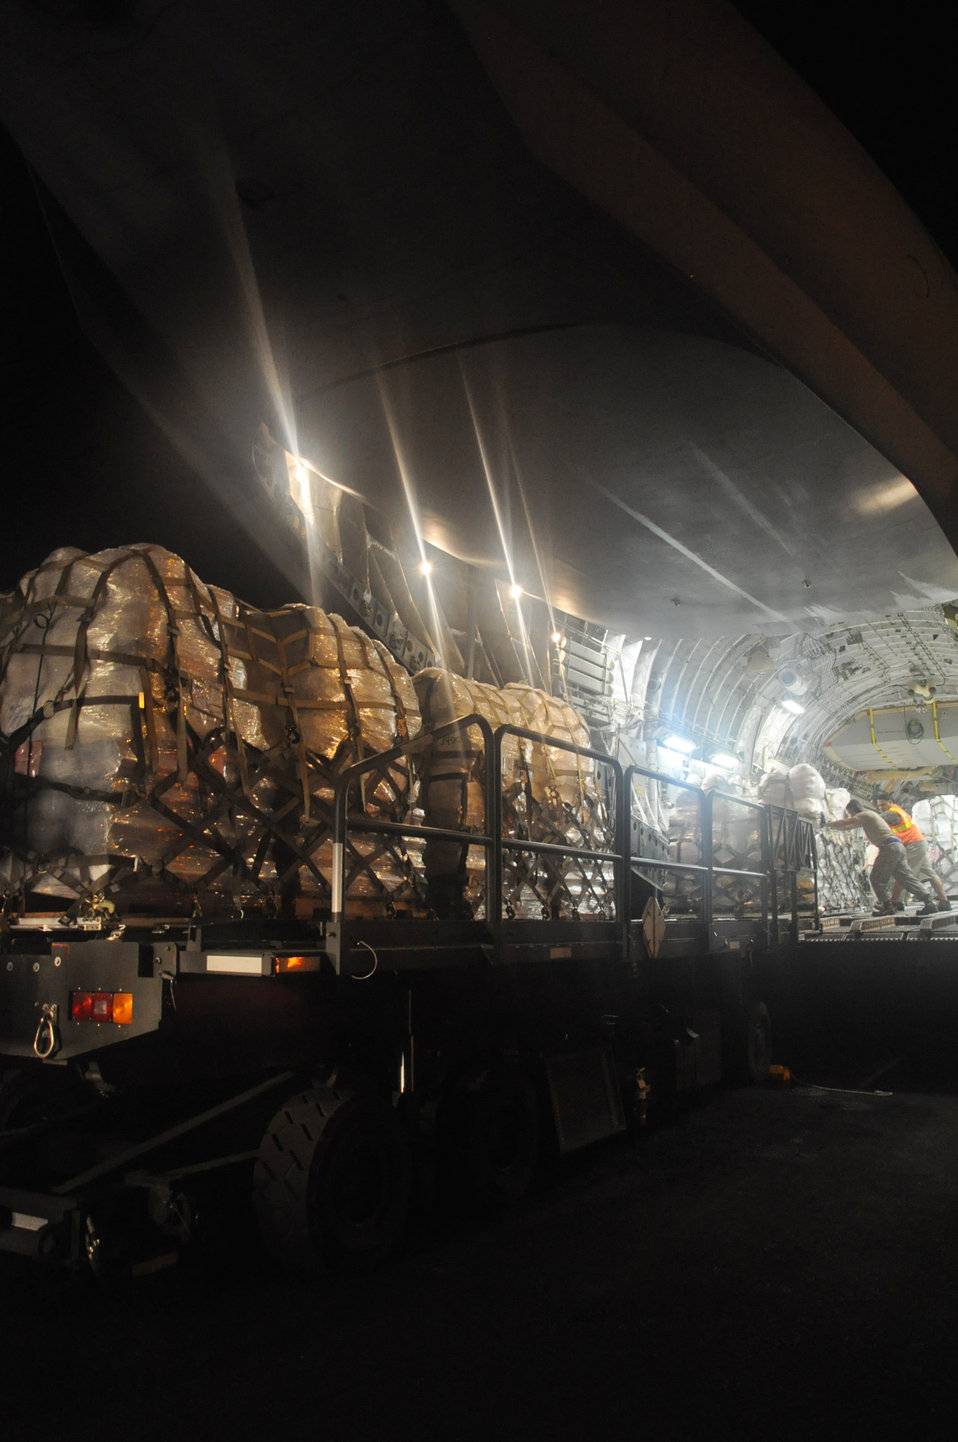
McChord Airmen complete second humanitarian airlift to American Samoa

Airmen from McChord Air Force Base, Wash., and Hickam AFB, Hawaii, and Air Mobility Command civilians offload Federal Emergency Management Agency cargo from a C-17 Globemaster III Oct. 10, 2009, at Pago Pago International Airport, American Samoa.